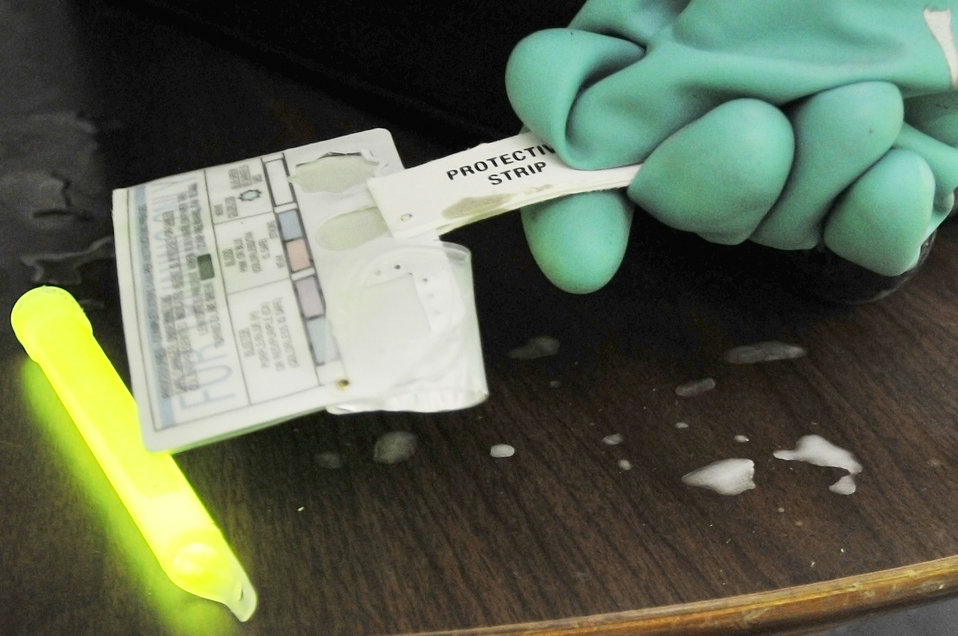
Airmen in Europe test threat responses

Airmen simulate a chemical test challenge in Level A suits during the 2009 Chemical, Biological, Radiological, and Nuclear Challenge June 23 at Ramstein Air Base, Germany.